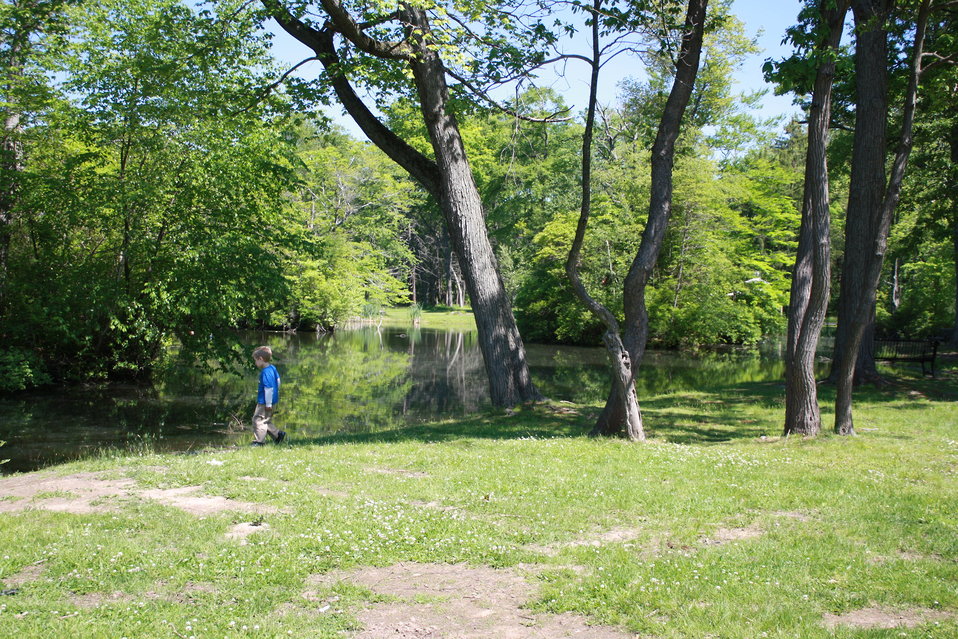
Pond at Keney Park in Hartford, Conn.